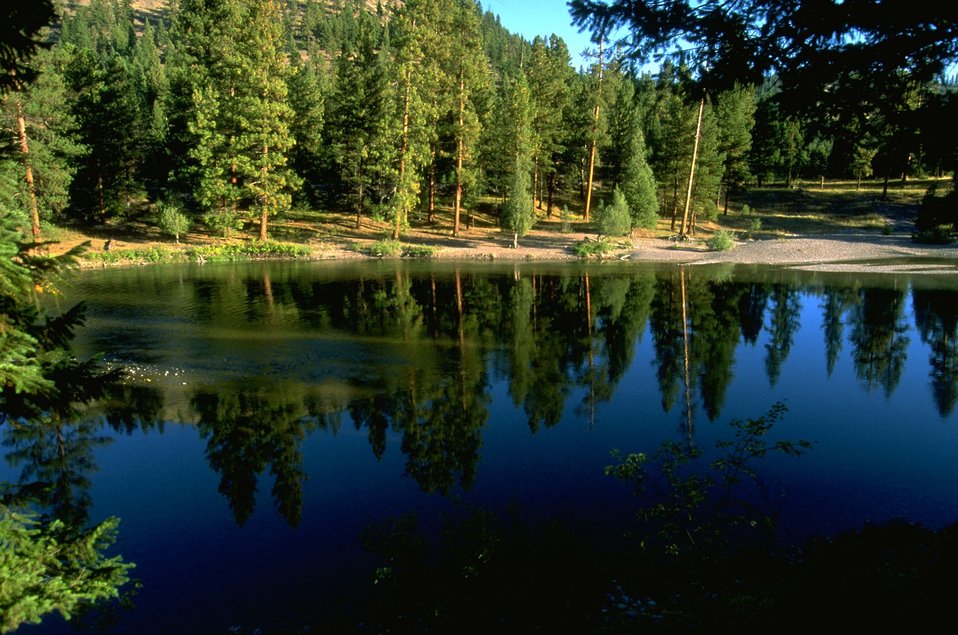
Red Rocks day-use area of Blackfoot River in the early morning